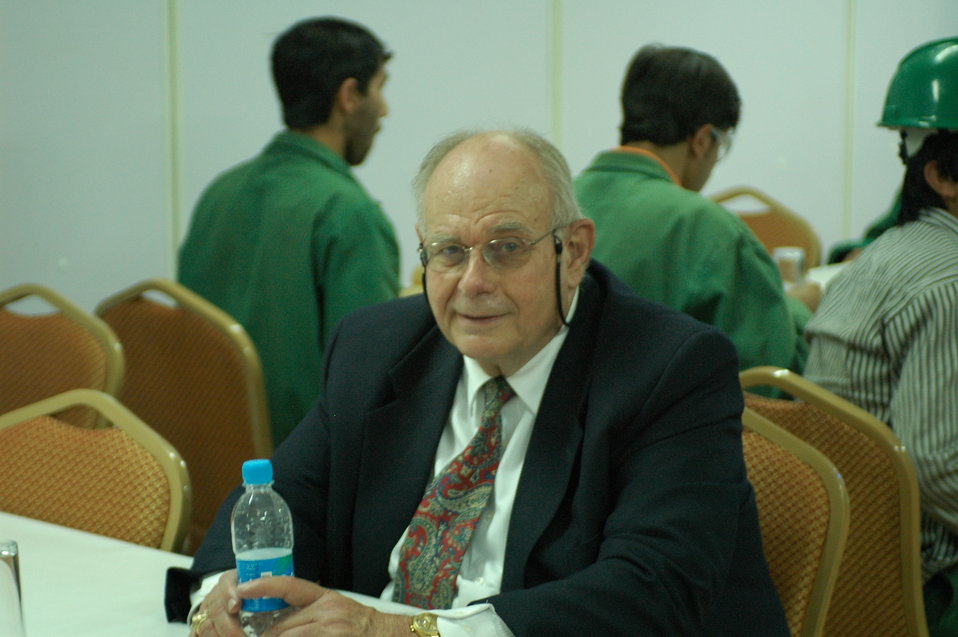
105 MW Tarakhil Power Plant Handover